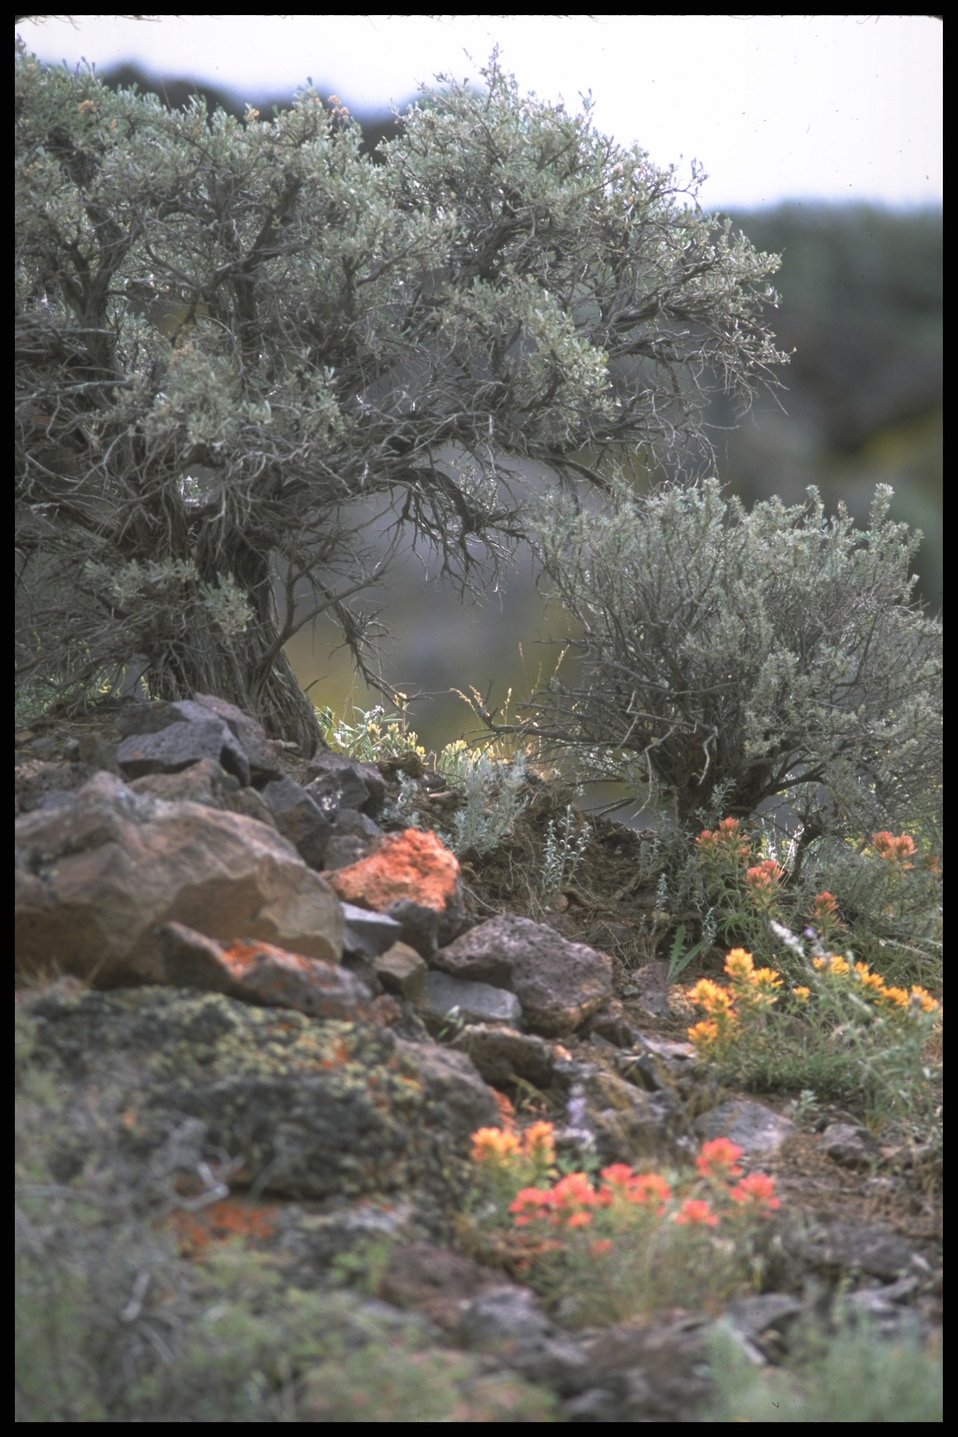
Lakeview District wildflower habitat.